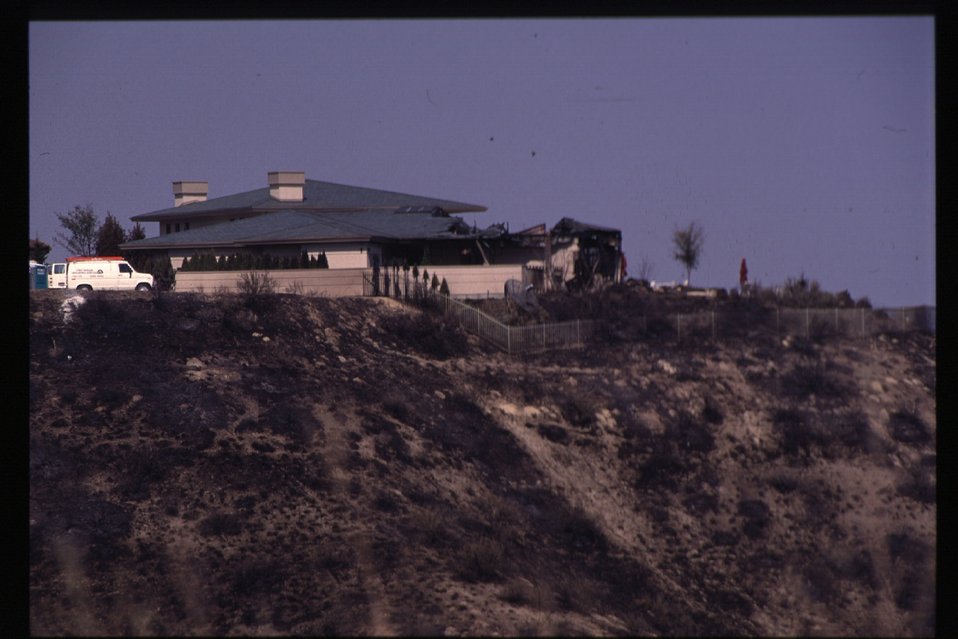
Urban interface 8th Street Fire Four Rivers Field Office LSRD Lower Snake River District